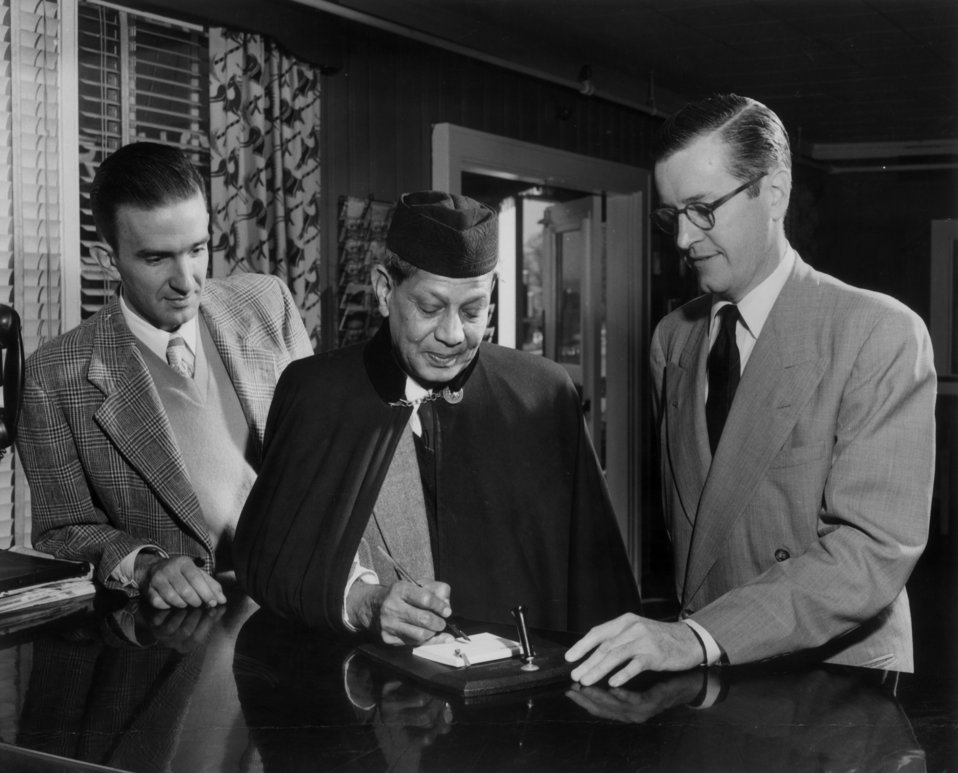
Francisco Aquirre- Batres, Boshi Sen, and James J. McCabe Alexander Hotel Oak Ridge

55-0290a DOE photo by Don Landstrom

Francisco Aquirre- Batres, Boshi Sen, and James J. McCabe Alexander Hotel Oak Ridge Tennessee 4-29-55